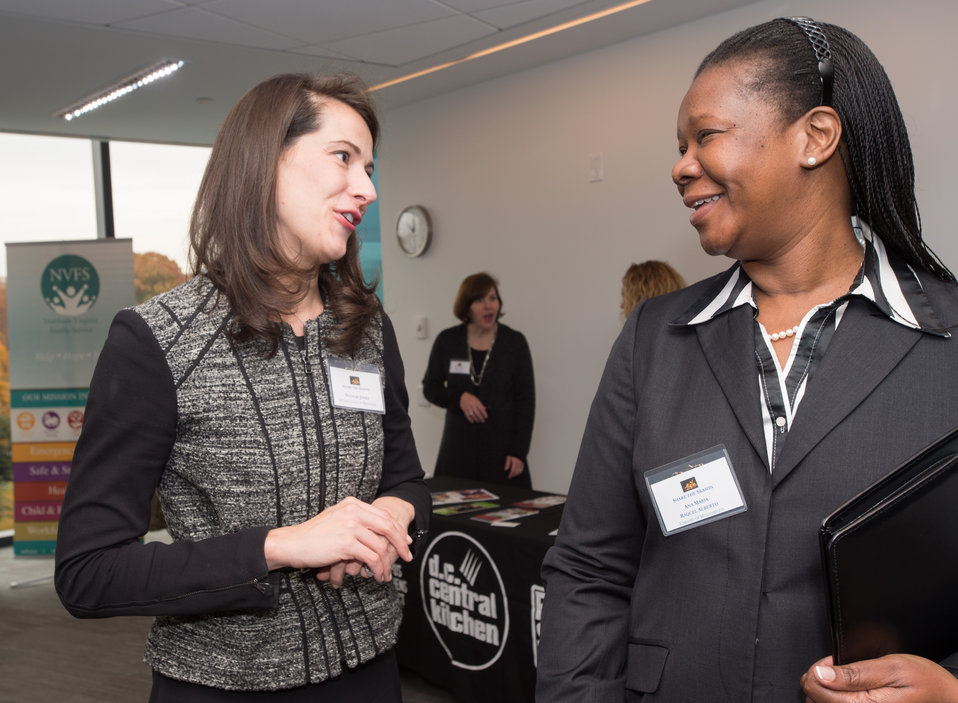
U.S. Department of State Acting Chief of Protocol Natalie Jones speaks with Mozambique Embassy representative Ana Maria Raquel Alberto at the Share the Season event organized by the U.S. Department of State Office of the Chief of Protocol Diplomatic Partnership Division at the Business Roundtable (BRT) in Washington, D.C. on Thursday, Nov. 21, 2013. BRT is a non-profit association of chief executive officers of leading U.S. companies that encourages embassies and diplomats to be active in local community service projects.